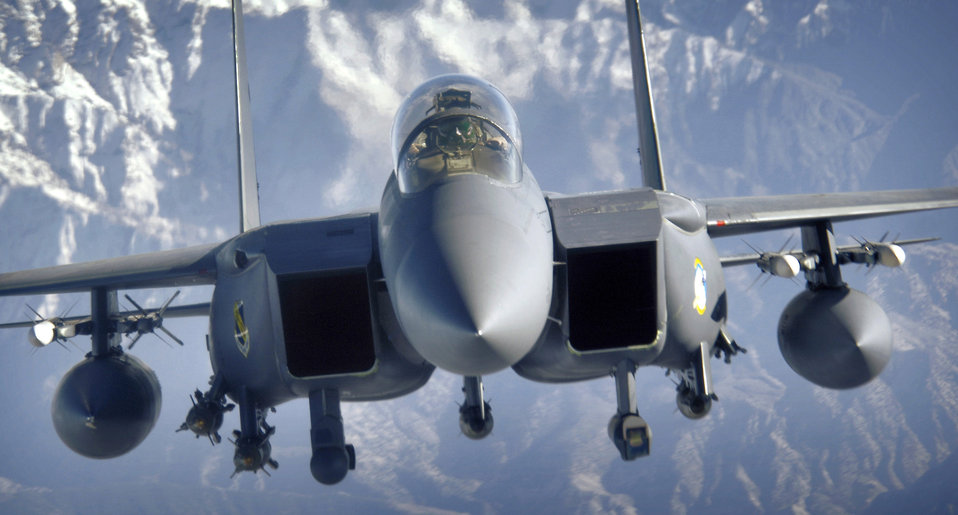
Oct. 8 airpower summary: F-15Es deter enemy activities

An F-15E Strike Eagle soars over the mountains of Afghanistan providing close-air support to deter enemy activities. The F-15Es and other coalition aircraft flew 111 close-air-support missions in Iraq and Afghanistan.